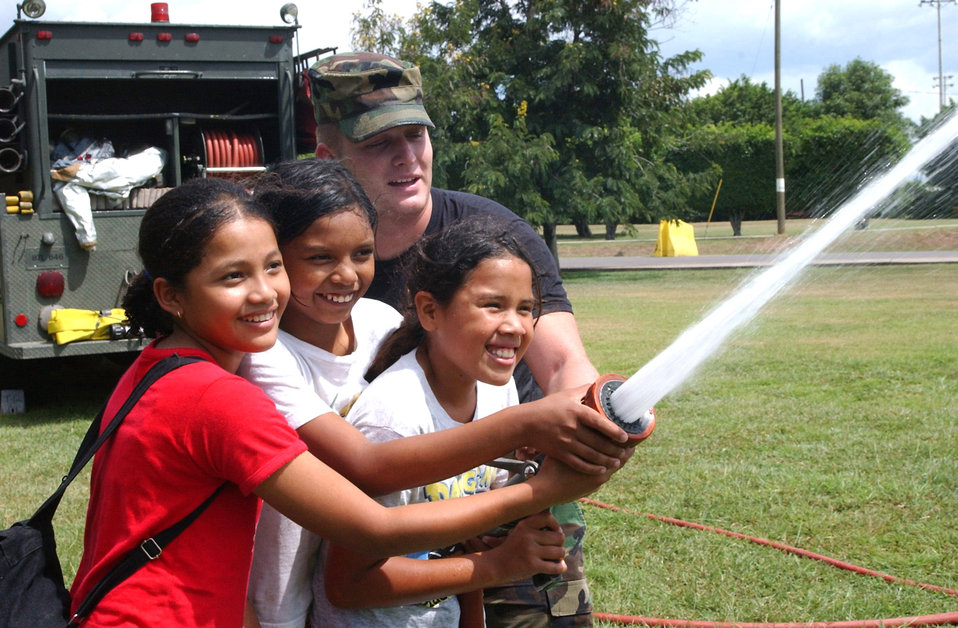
Honduran National Children's Day

SOTO CANO AIR BASE, Honduras -- Airman 1st Class Cris Pennock aims a fire hose with Honduran orphans during Hoduran National Children's Day on Sept. 10. Airmen invited 90 children from a nearby orphanage to celebrate the event here.